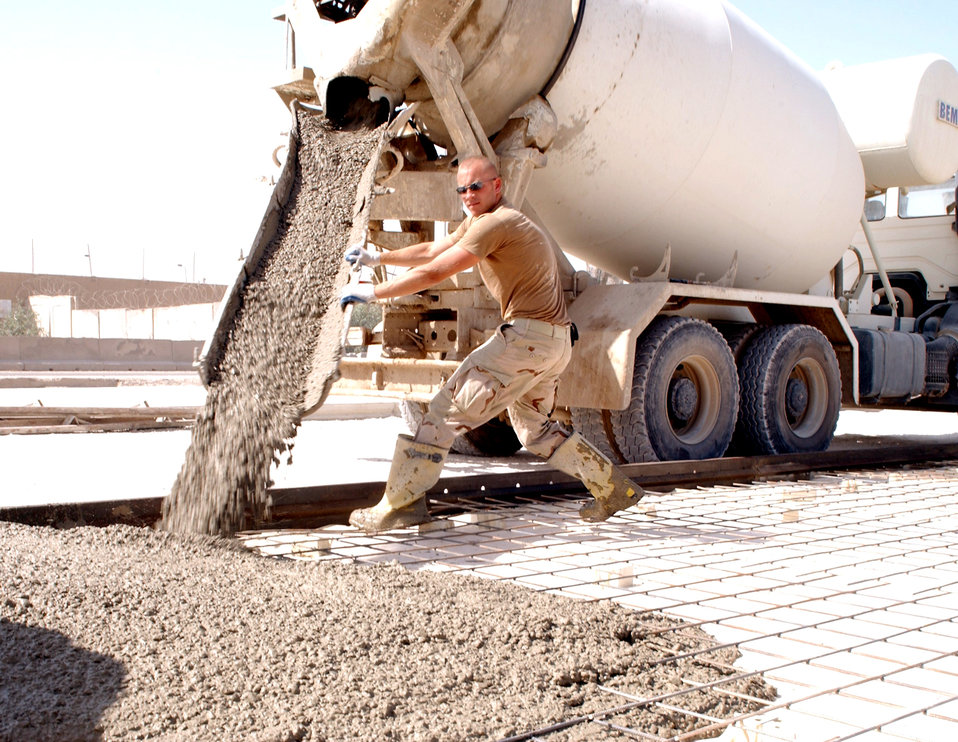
Red Horse engineers build Iraqi future

BAGHDAD, Iraq -- Staff Sgt. Brian Smetzer directs the concrete pouring at the main entry control point for the Baghdad International Airport complex. The project will be used to improve security for civilians and coalition forces in the area. He is deployed to the 557th Expeditionary Red Horse Squadron from the Pennsylvania Air National Guard.